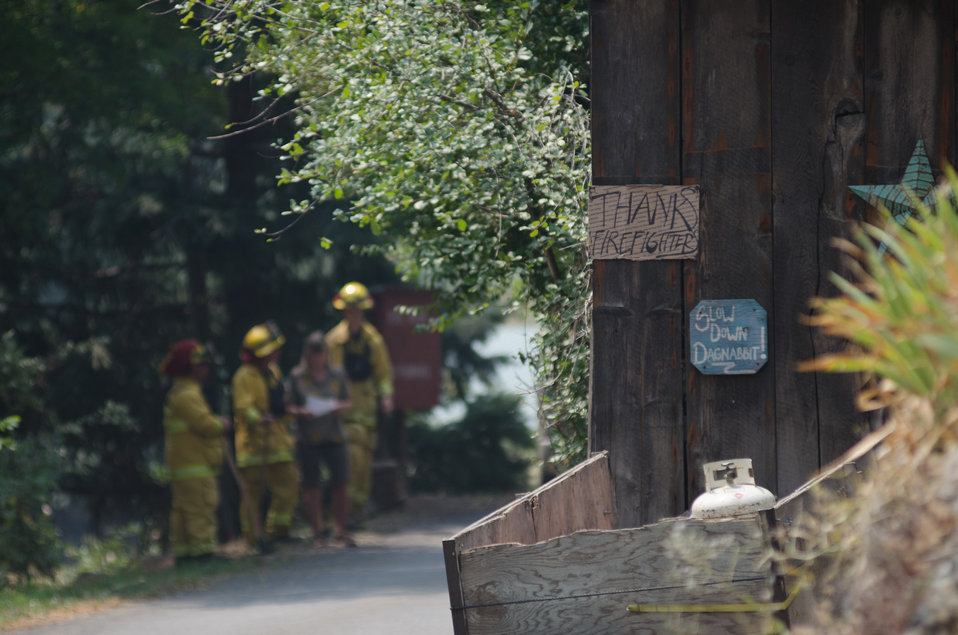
Fire fighters specializing both structural and wildland firefighting from Tahoe National Forest, Mt. Shasta-Trinity National Forest, South Yreka Fire Department, Dunsmuir-Castella Fire Department and others, have been called to the Salmon River Complex Fire, and conduct their structure-by-structure assessment of the urban intermix environment, at Sawyers Bar, CA in the Klamath National Forest, Tuesday, Aug. 6, 2013. The firefighters advise resident about fire prevention measures they are doing on their own as well as other measures they could take to prepare for fire. Actions such as moving away firewood, cutting and clearing plants next to their structures, and using garden hoses to soak structures and grounds all help in the event the main fire comes into their town.
There are two types structure environments in the realm of wildland firefighting.
This urban intermix structural protection environment is generally the more challenging, where structures have been built within a wildland area, isolated to some degree from other structures, but with no separation from wildland fuels (trees, brush and grass). This requires each structure to be assessed on a case-by-case basis. Fire protection measures will be tailored to each situation; defending these structures require a more complex solution, more firefighters, equipment and resources per structure.